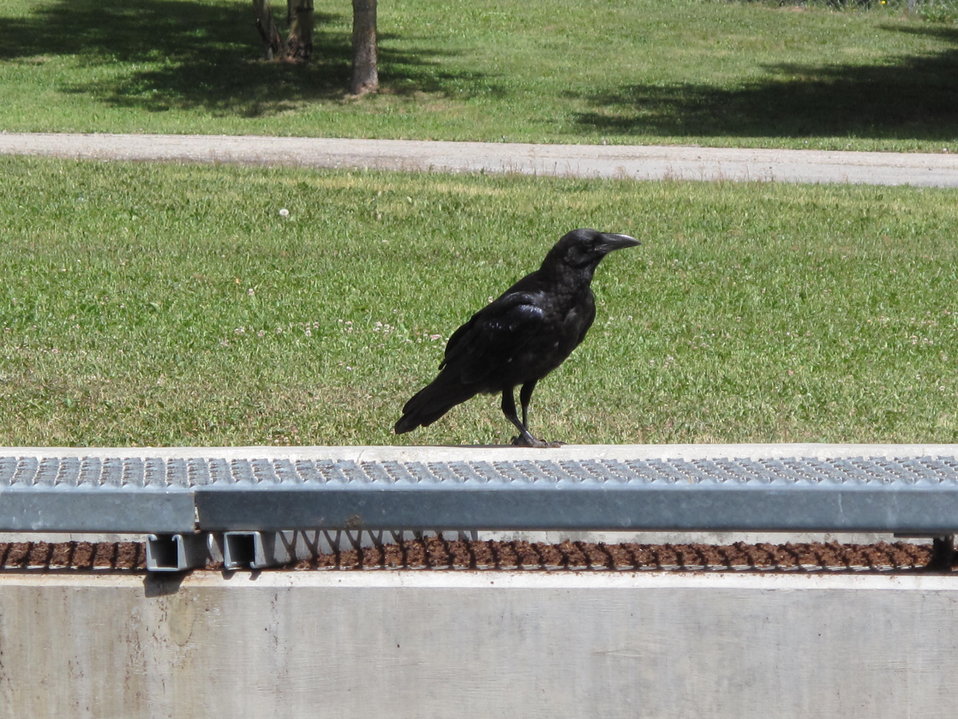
Leadville National Fish Hatchery

A local looking for a free meal in one of the outdoor raceways!